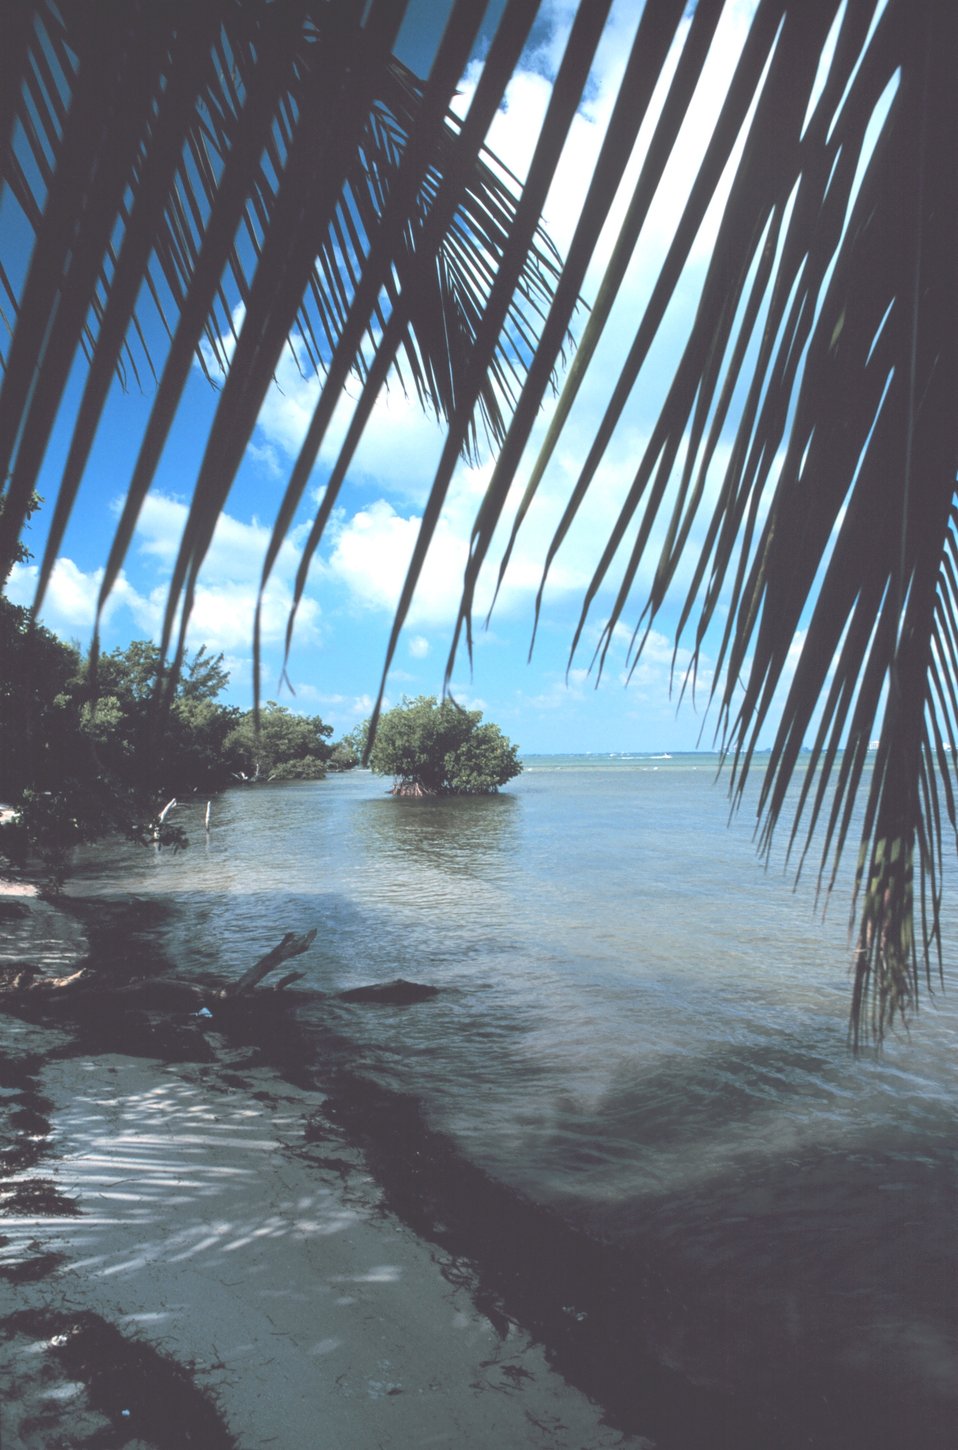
Pelican Point Beach